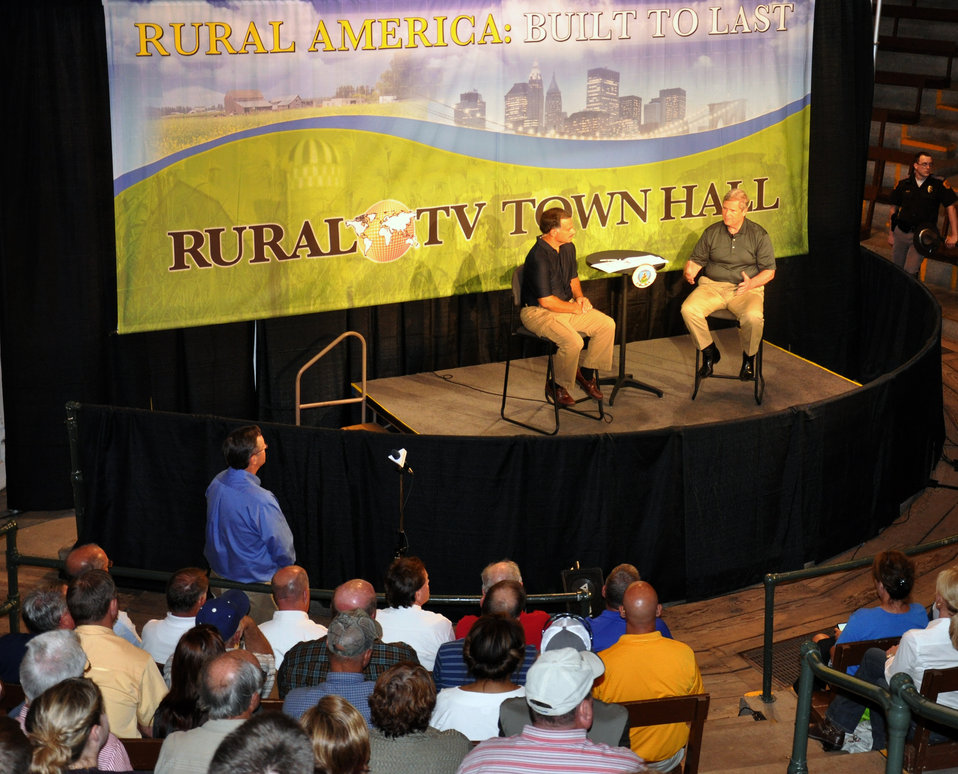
RFD-TV Host Max Armstrong (left) and USDA Agriculture Secretary Tom Vilsack (right) take a question from an audience during a town hall meeting on RFD TV at the Iowa State Fair in Des Moines, Iowa, on Thursday, August 16, 2012.
The Secretary was in Iowa As part of continuing steps by the Obama Administration to assist livestock producers in response to the historic drought. USDA will utilize nearly $16 million in financial and technical assistance to immediately help crop and livestock producers in 19 states to cope with the adverse impacts of the historic drought. In addition, USDA will initiate a transfer of $14 million in unobligated program funds into the Emergency Conservation Program. These funds can be used to assist in moving water to livestock in need, providing emergency forage for livestock, and rehabilitating lands severely impacted by the drought. Together these efforts should provide nearly $30 million to producers struggling with drought conditions.Most recently, Secretary Vilsack signed disaster designations for an additional 44 counties in 12 states including Iowa as primary natural disaster areas due to damage and losses caused by drought and excessive heat.